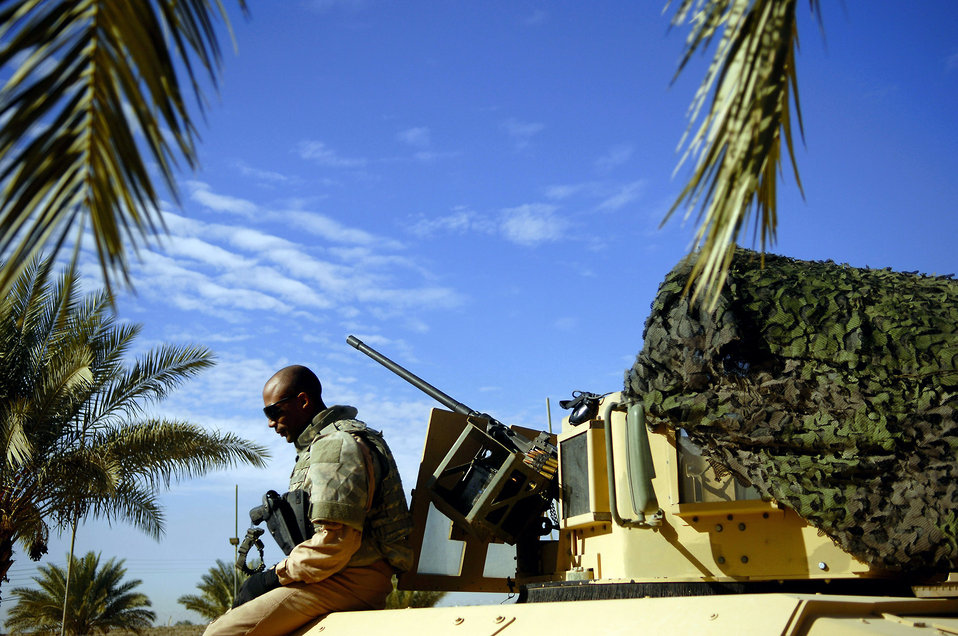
Airmen improve Iraq's security

Senior Airman Juwan Young waits on his tactical vehicle Feb. 23 prior to patrolling the east and west section of Rasheed, Iraq. Airman Young is deployed to Det. 3, 732nd Expeditionary Security Forces Squadron at Sather Air Base, Iraq. He is from the 2nd Security Forces Squadron from Barksdale Air Force Base, La.